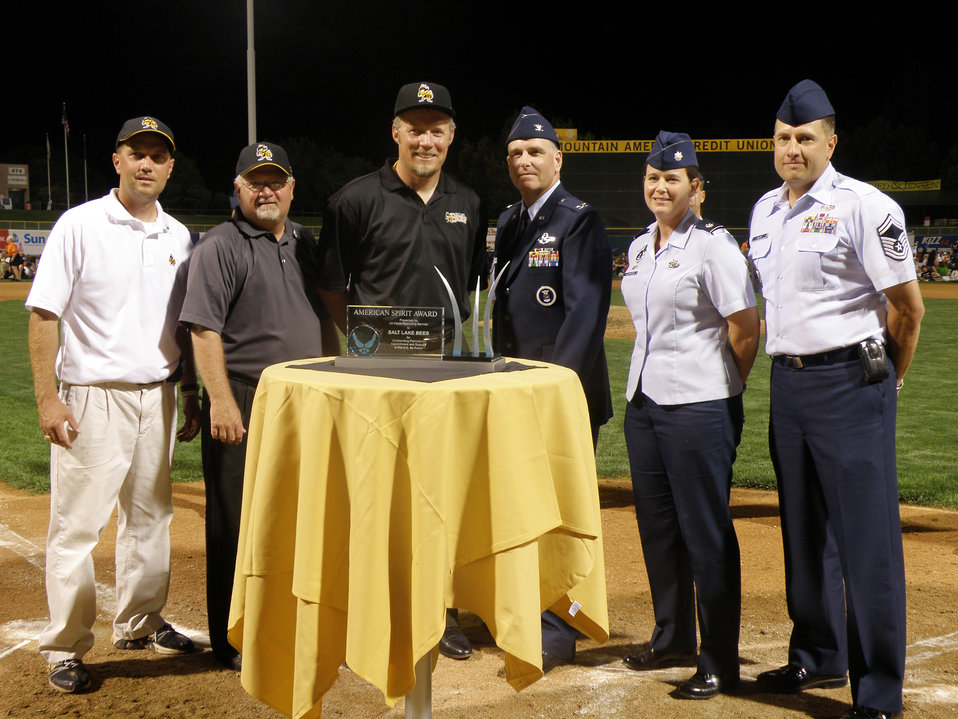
Baseball team wins 'American Spirit' Award

The Salt Lake Bees Triple-A baseball team was presented the Air Force Recruiting Service's top civic award Aug. 22 following the game at Spring Mobile Park in Salt Lake City, Utah. Participating in the ceremony were (from left to right) Brad Tammen, Salt Lake Bees assistant manager; Marc Amicone, Salt Lake Bees general manager; Greg Miller, chief executive officer for Larry H. Miller Group of Companies; Col. Mark Ward, 372nd Recruiting Group commander; Lt. Col. Jennifer Alexander, 368th Recruiting Squadron commander; and Senior Master Sgt. William Bialcak, chief of the 368 RCS marketing and training flight.